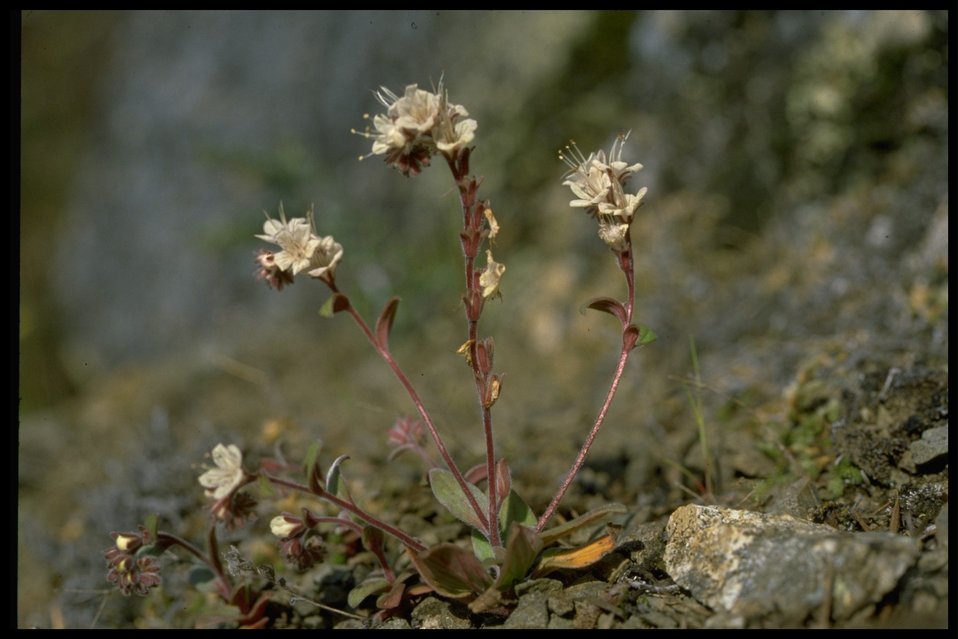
Medium shot of Umpqua phacelia (Phacelia verna).